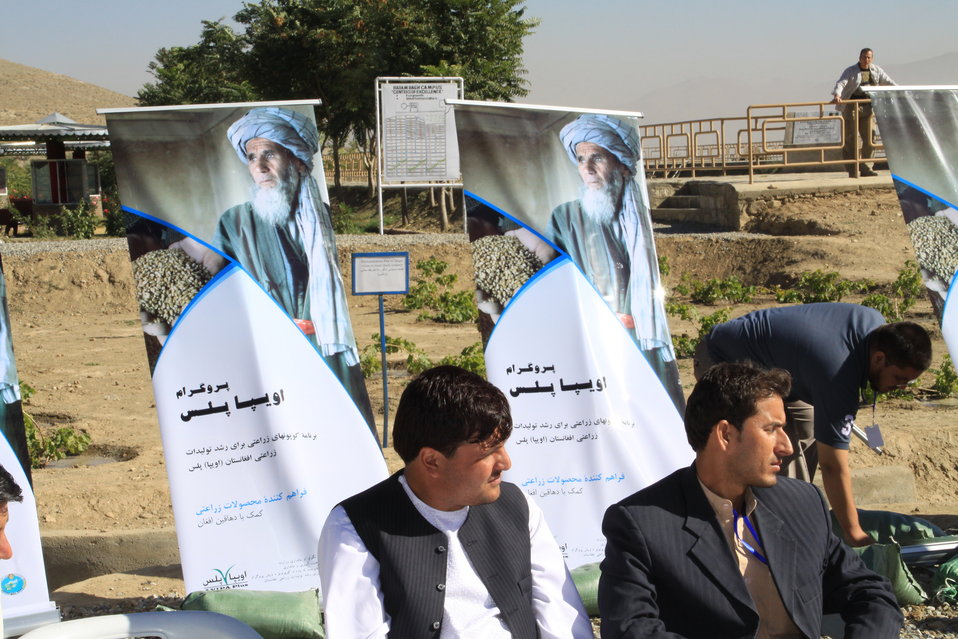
AVIPA Plus Wheat Seed Distribution 101005

US Ambassador Karl Eikenberry and USAID Acting Mission Director Kevin Brownawell joined the Minister of Agriculture, Irrigation and Livestock, H.E. Minister Mohammed Rahimi in signing a Memorandum of Understanding and distributing vouchers to area farmers for wheat and fertilizer.